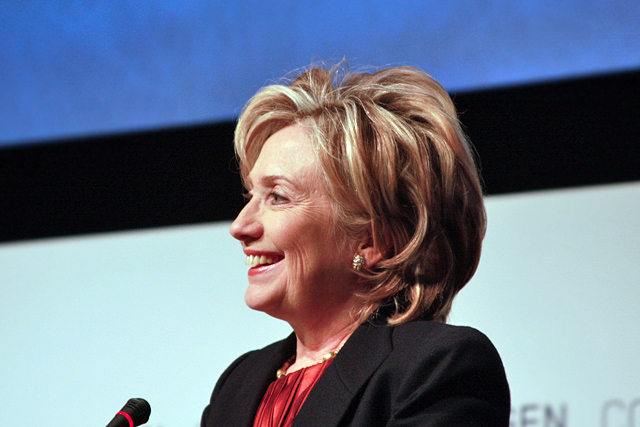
Secretary Clinton Press Conference at COP-15

U.S. Secretary of State Hillary Rodham Clinton participates in a press briefing during COP15 (Conference of the Parties to the UN Framework Convention on Climate Change) in Copenhagen, Denmark December 17, 2009.